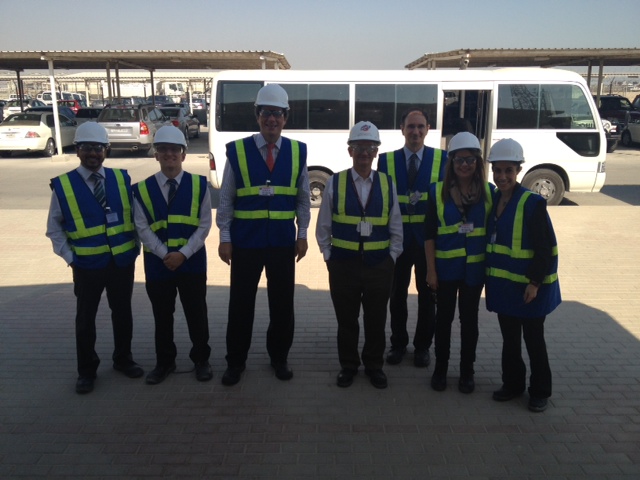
Assistant Secretary Fernandez Tours the Doha International Airport

Assistant Secretary of State for Economic and Business Affairs Jose Fernandez tours the Doha International Airport, which is currently under construction, in Qatar on February 27, 2012.